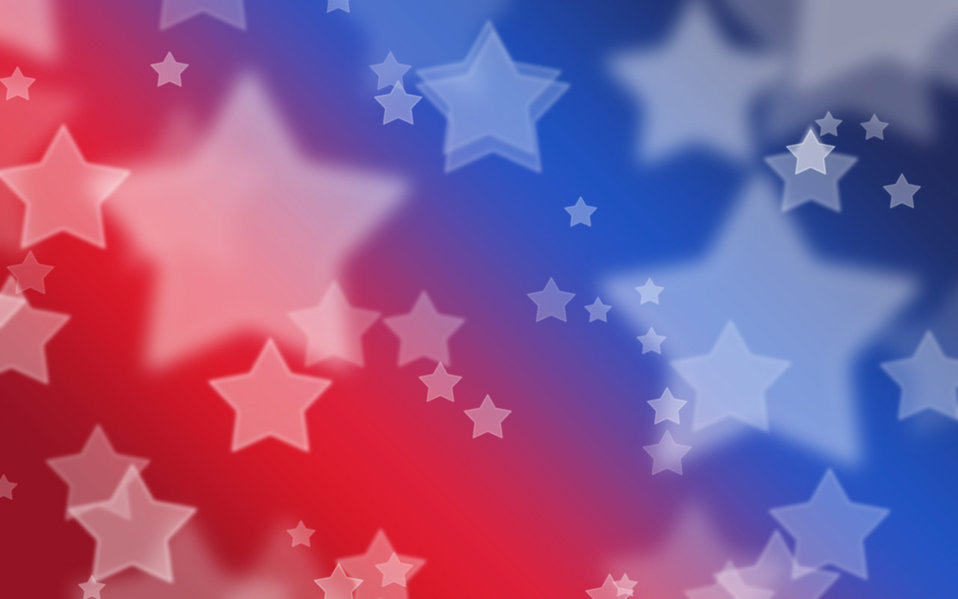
Patriotic stars

Background with patriotic coloring and stars. resolution 1920x1200..